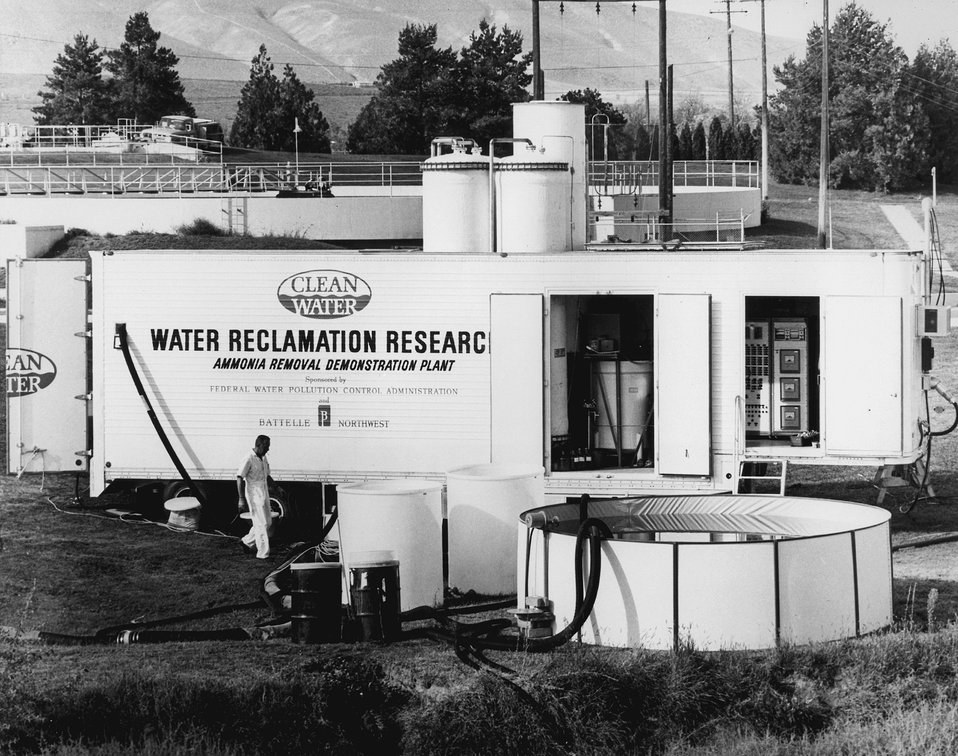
A selective ion exchange process fo removing ammonia from agricultural and municipal waste waters has been developed by the AEC's Battelle-Pacific Northwest Laboratory. c. 1970